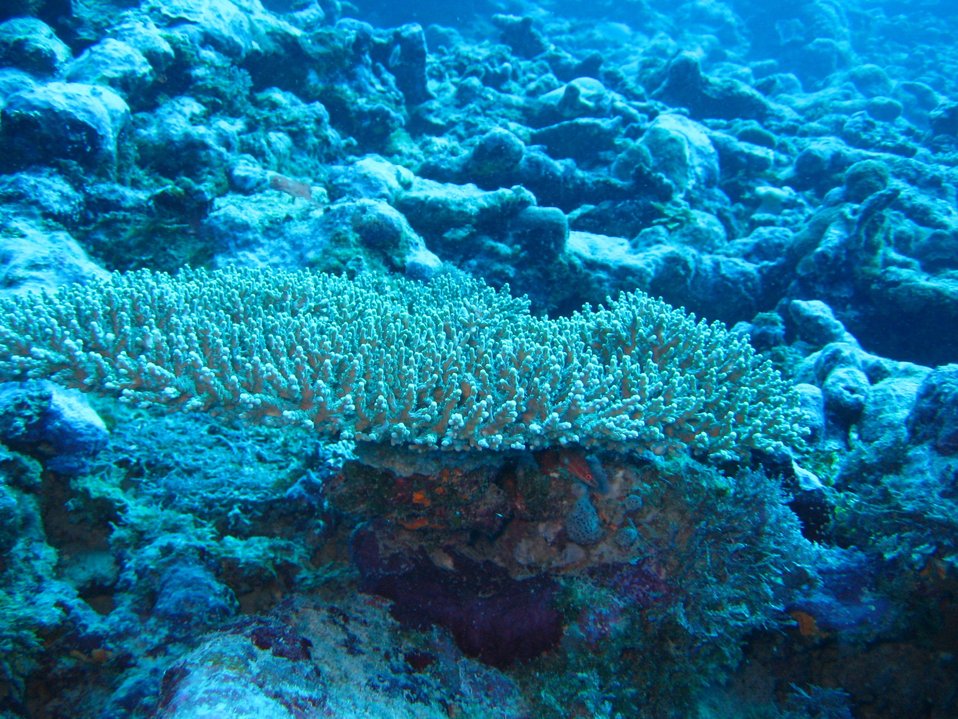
Coral (Acropora pulchra) in an area of relatively bare bottom